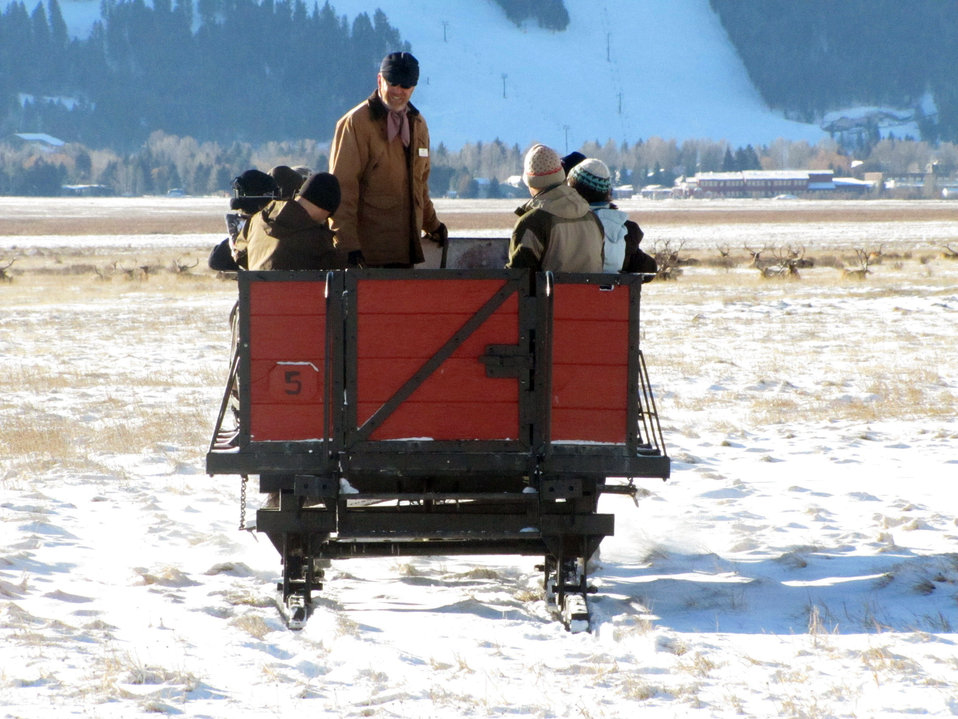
Welcoming Remarks

A sleigh driver welcomes his passengers to the National Elk Refuge as they make their way to a nearby group of elk.